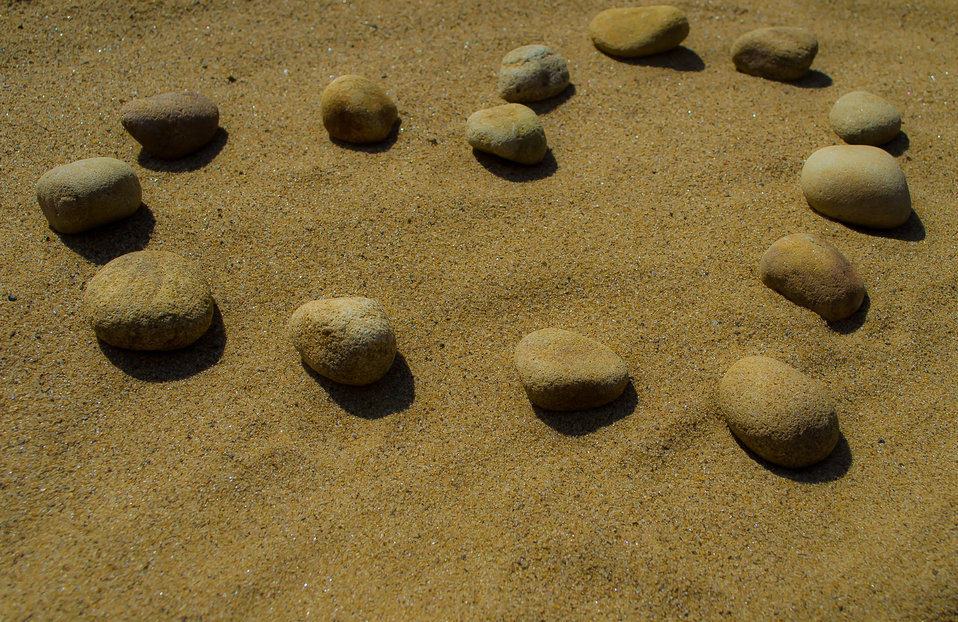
Heart of love.